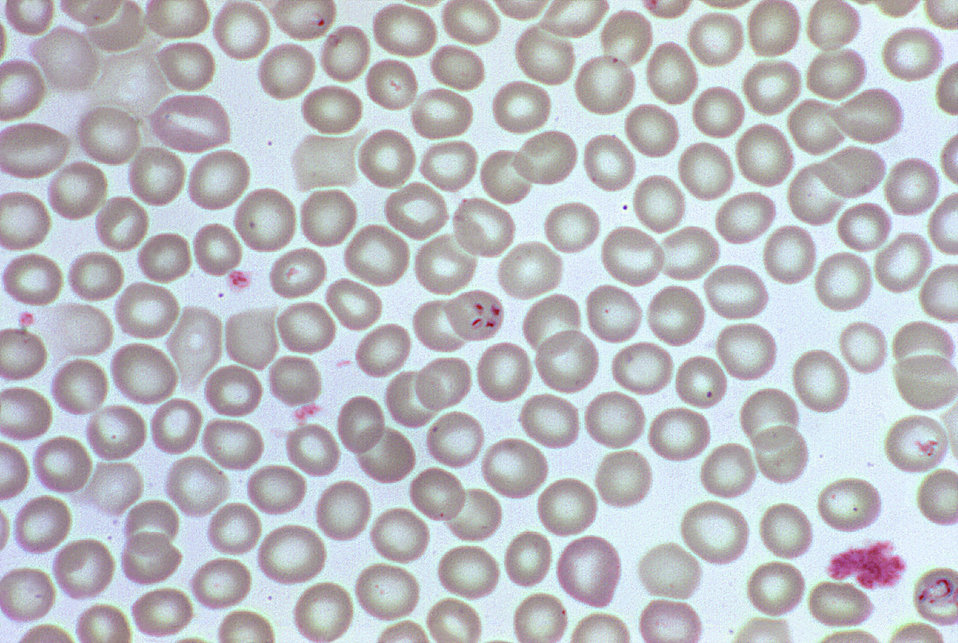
Note the developmental 'tetrad' configuration of these Babesia sp. trophozoites, which resemble P. falciparum.